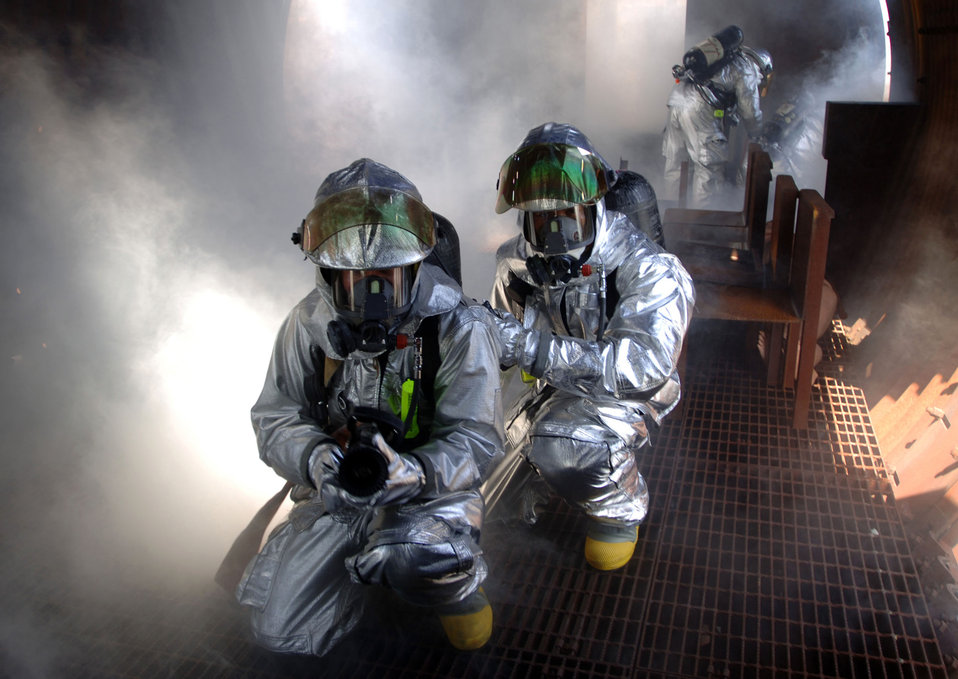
It's hot inside

YOKOTA AIR BASE, Japan -- Firefighters with the 374th Civil Engineer Squadron respond to a